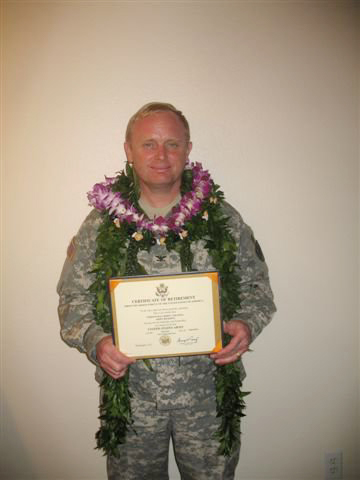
Ray Born, the Permits Manager for Papahānaumokuākea Marine National Monument, served in the Army, Army Reserve and Army National Guard for more than 35 years, starting in 1980. His military career started as a Lieutenant in a light infantry company through Battalion Commander for a separate Light Infantry Battalion with 500 soldiers assigned in Guam. He also served at a Brigade Executive Officer, Division Personnel Officer, and Seminar Leader for Reserve Components National Security Conference.